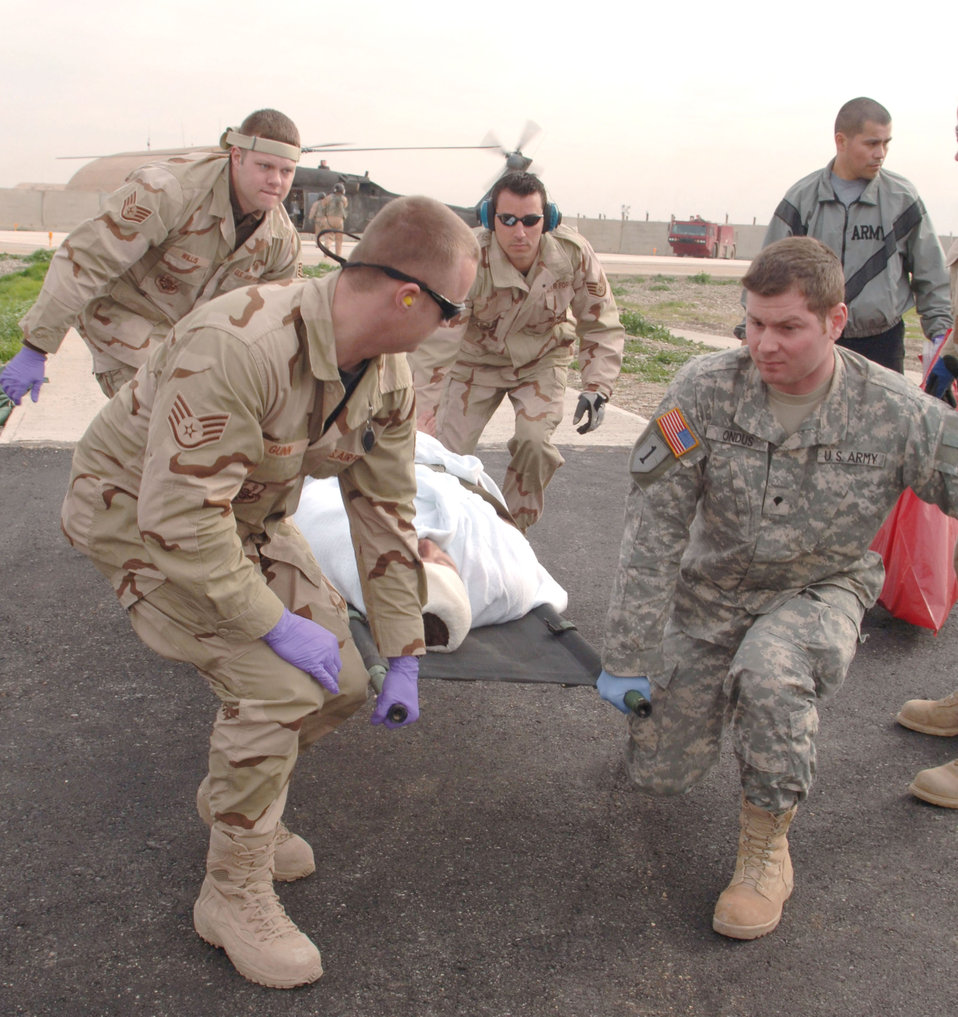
Kirkuk Airmen provide care following attack

Airmen and Soldiers carry an Iraqi civilian injured during a Feb. 1 clash between the Iraqi Army and insurgents near Kirkuk. The patient was treated by the 506th Expeditionary Medical Squadron at Kirkuk Air Base before being transported to Balad Air Base.